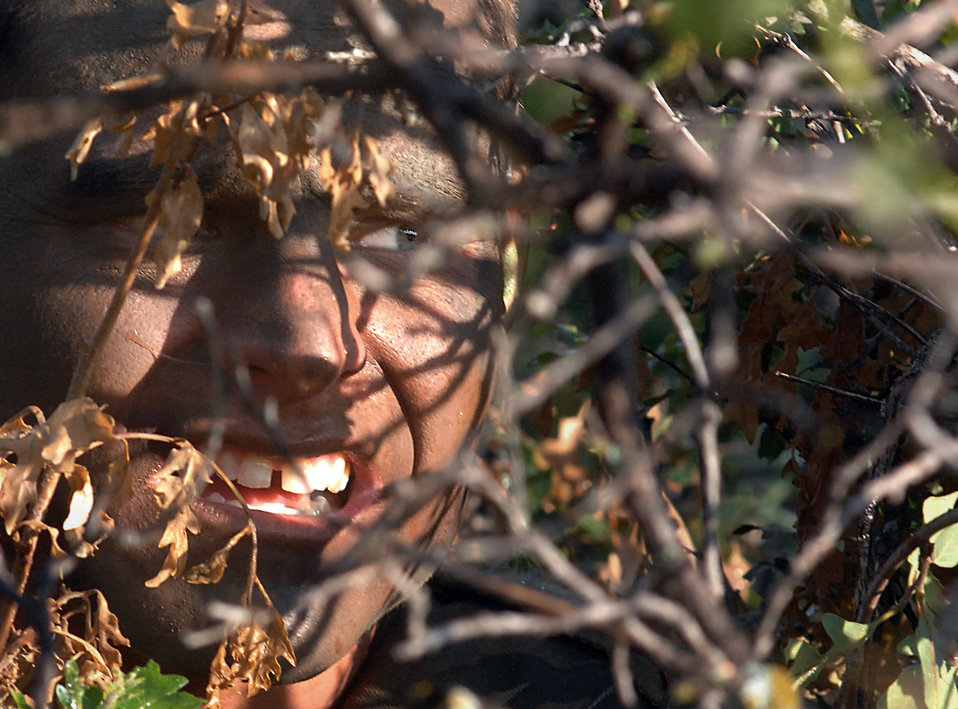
Global Engagement

Senior Airman Arthur Sgruggs, an